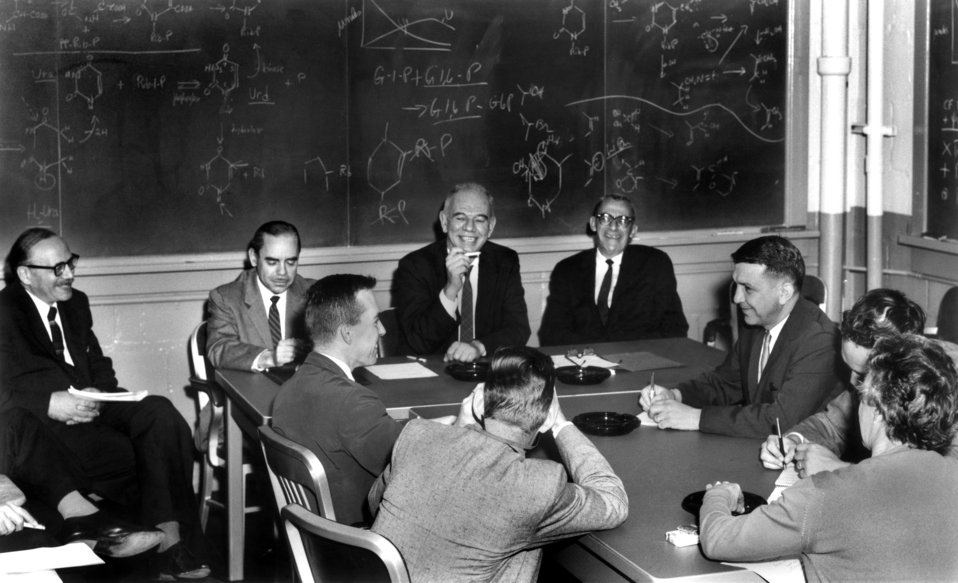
Ed Westcott shooting Press Conference Oak Ridge

61-0641-b DOE photo T.R. Cook 1961 Comissiner Leland Haworth Press Conference Admin. Bldg. Oak Ridge Tennessee